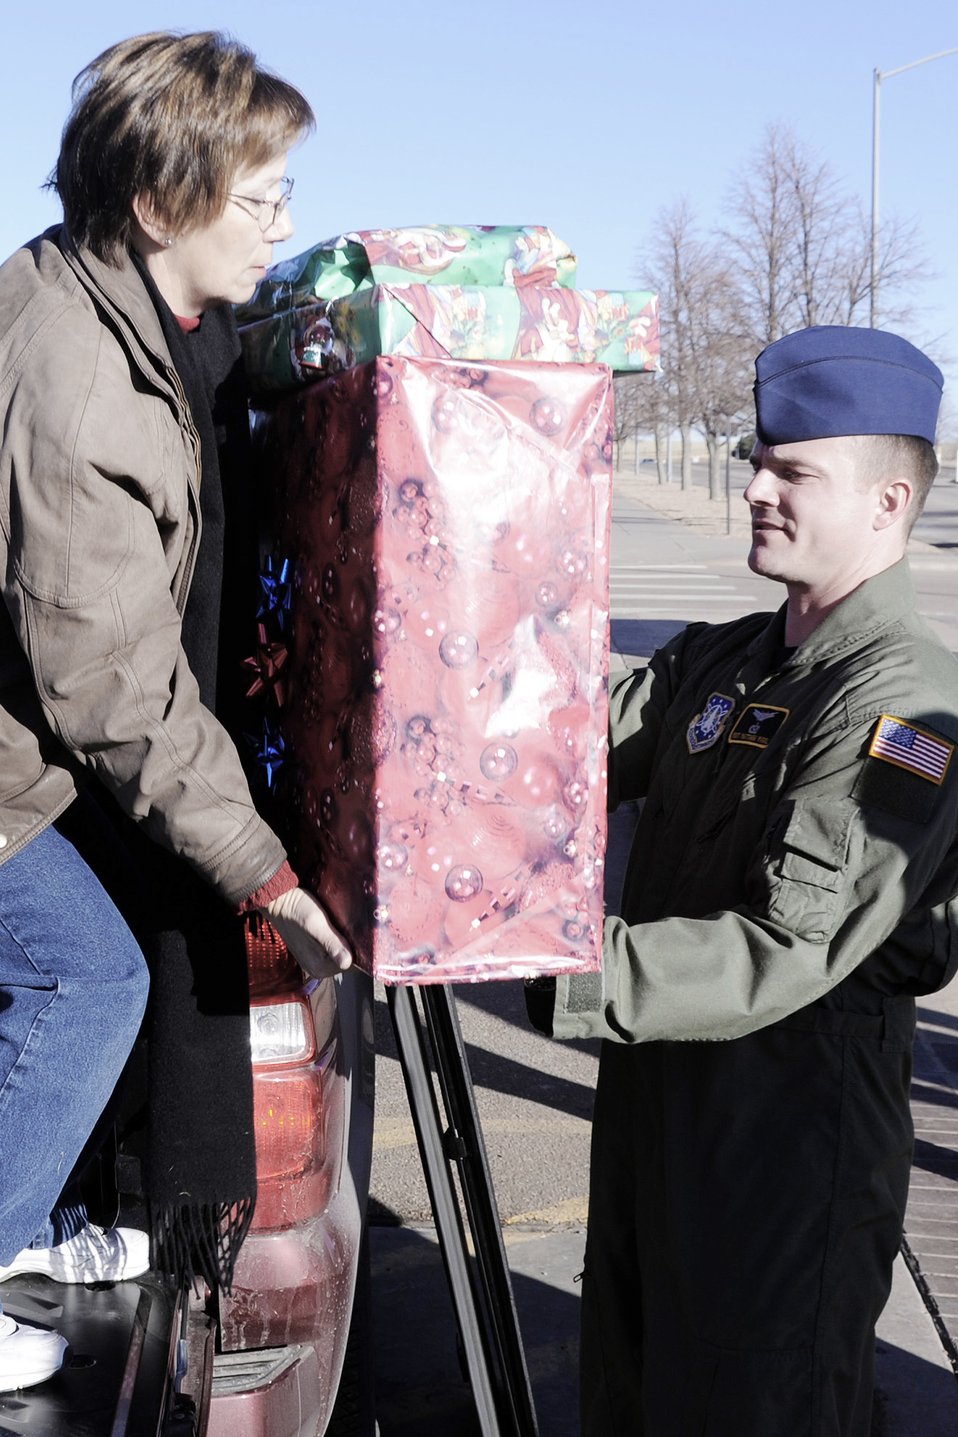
Christmas for Kids

Volunteers load toys from the